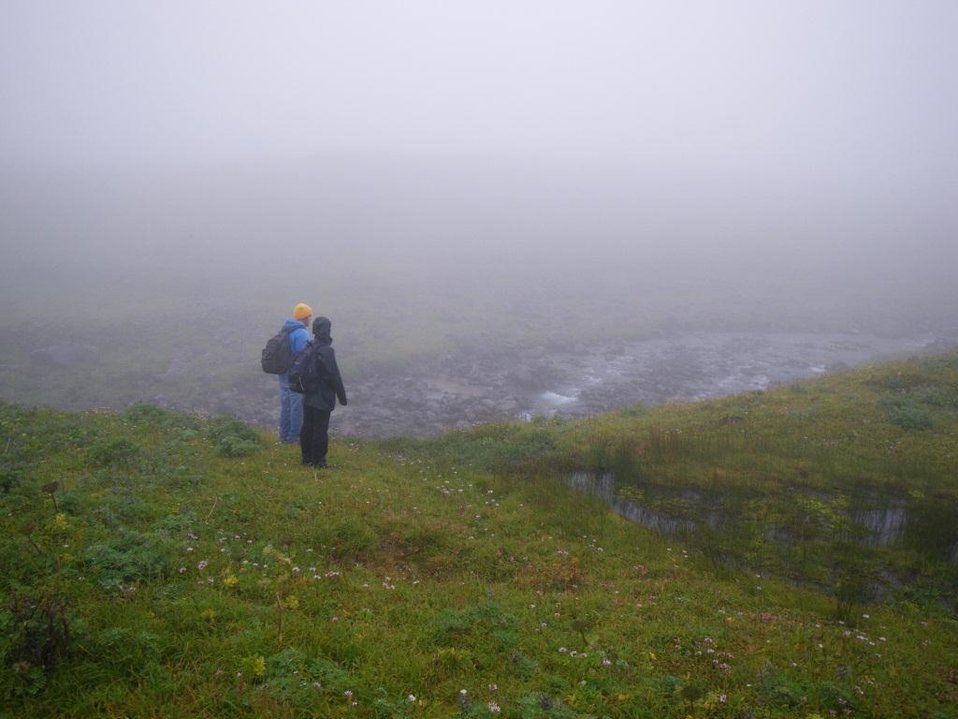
Izembek Wilderness

Wilderness near Frosty Peak, Izembek National Wildlife Refuge
Photo by Kristine Sowl,
USFWS, Public Domain